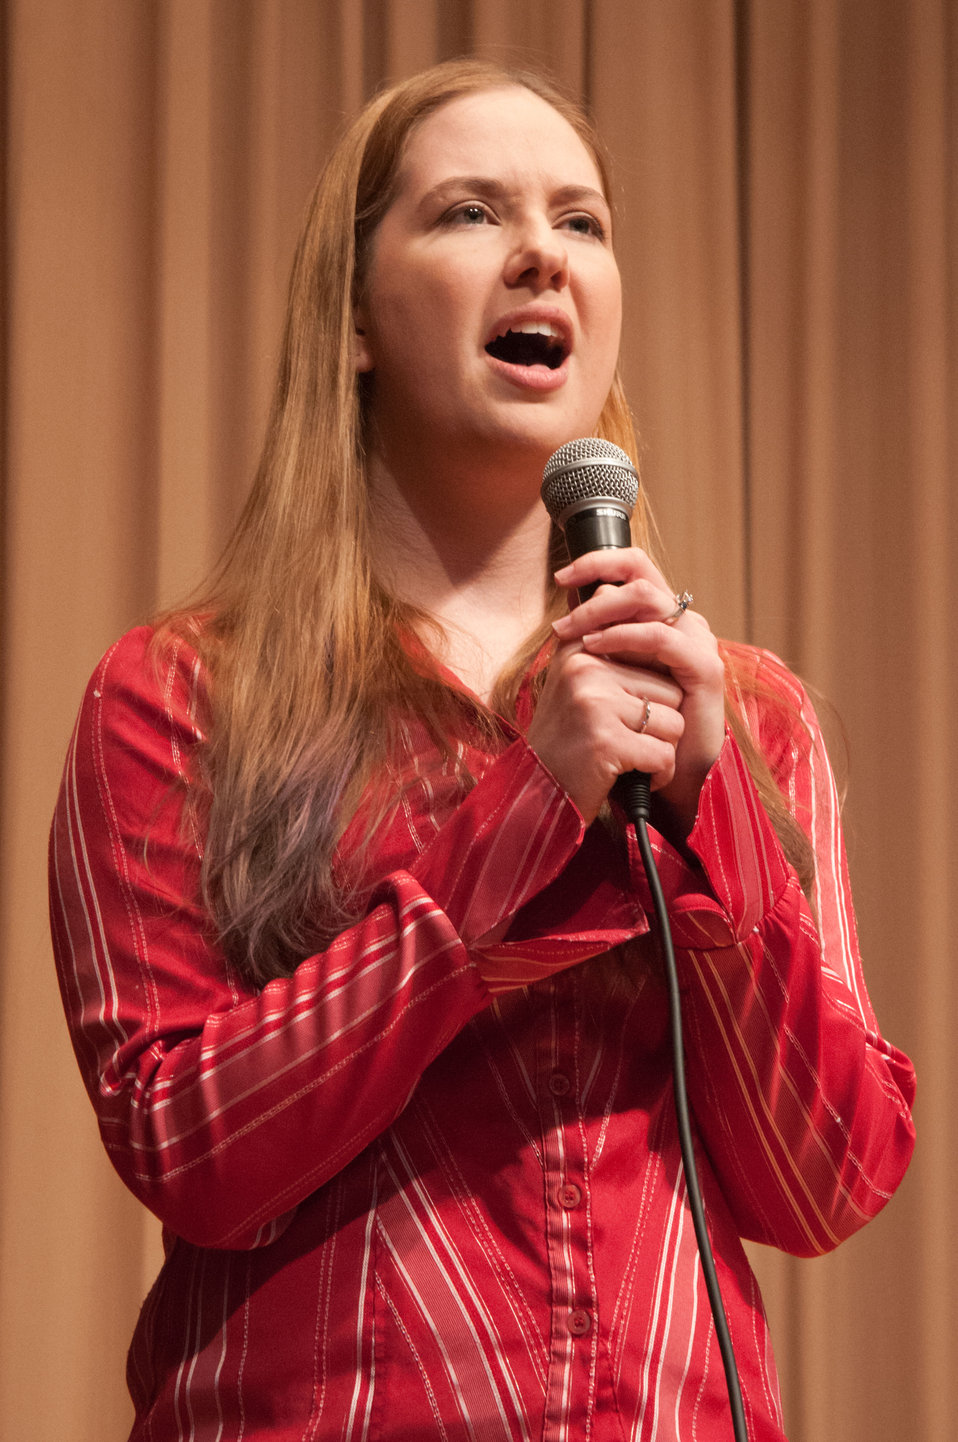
Agriculture Departmental Management, Office of Human Resources Management Program Specialist Bonnie Fauber sang the National Anthem at the 2012 Asian Pacific American Heritage Observance “Striving for Excellence in Leadership, Diversity and Inclusion” at the U.S. Department of Agriculture in Washington, D.C. on Thursday, May 24, 2012.